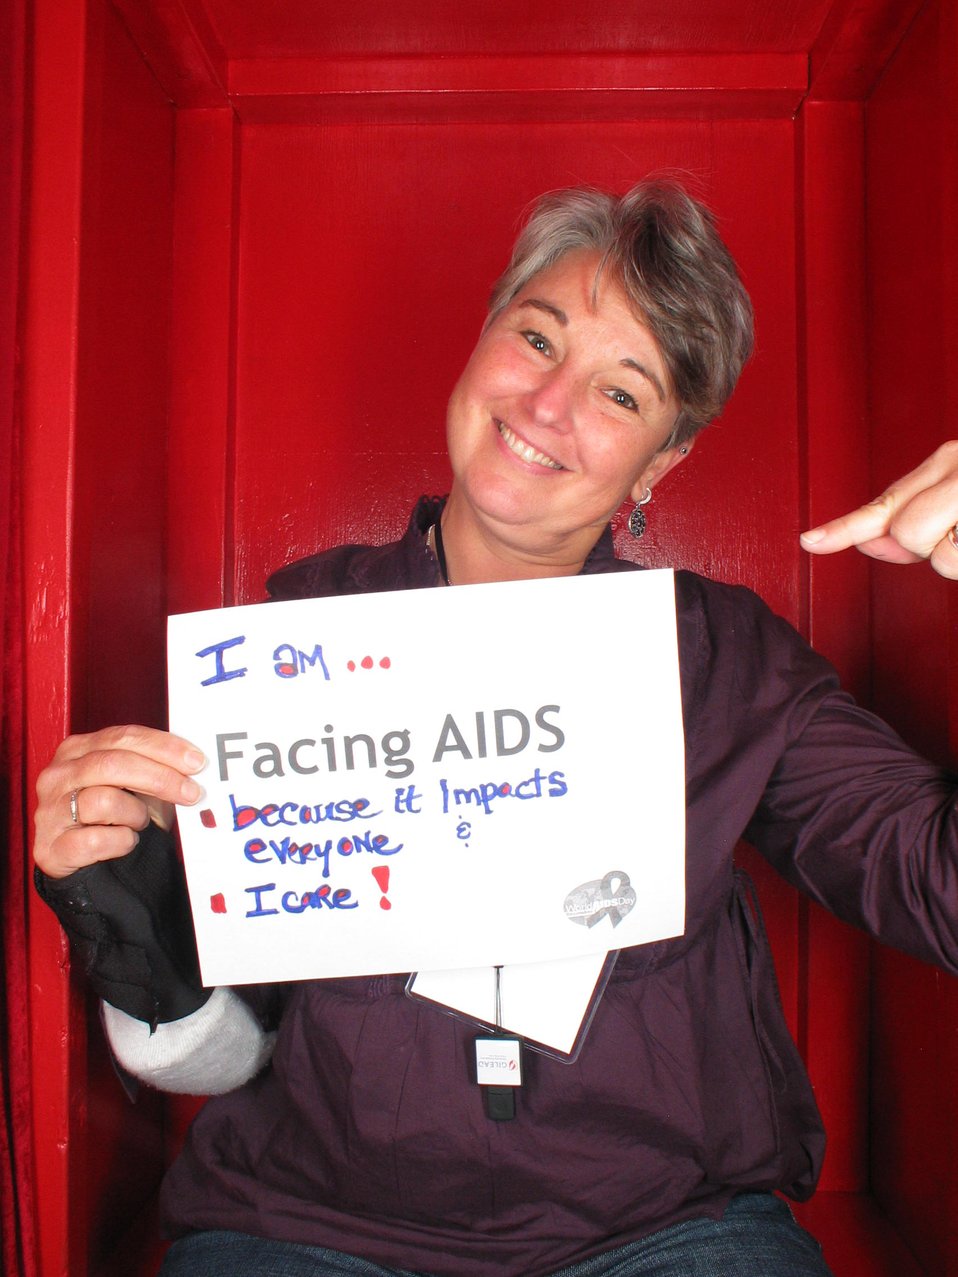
I am Facing AIDS because it impacts everyone I love!